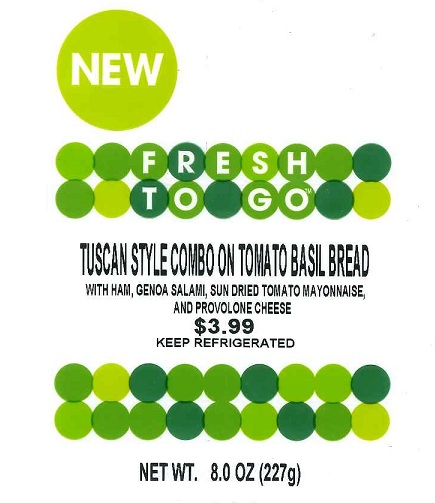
RECALLED – ‘Fresh To Go Tuscan Style Combo on Tomato Basil Bread’ sandwich

March 4th, 2014 – Product Recall – HC Schau and Sons issues allergy alert on undeclared Pine Nuts in ‘Fresh To Go’ Tuscan Style Combo on Tomato Basil Bread (sandwich).